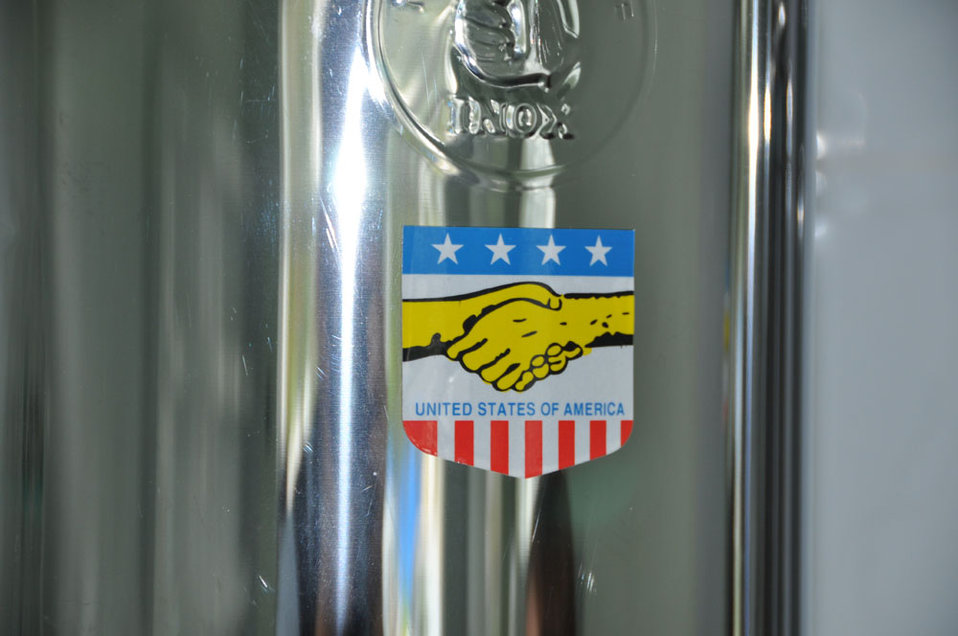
A kindergarten receives a new kitchen, funded by USAID.